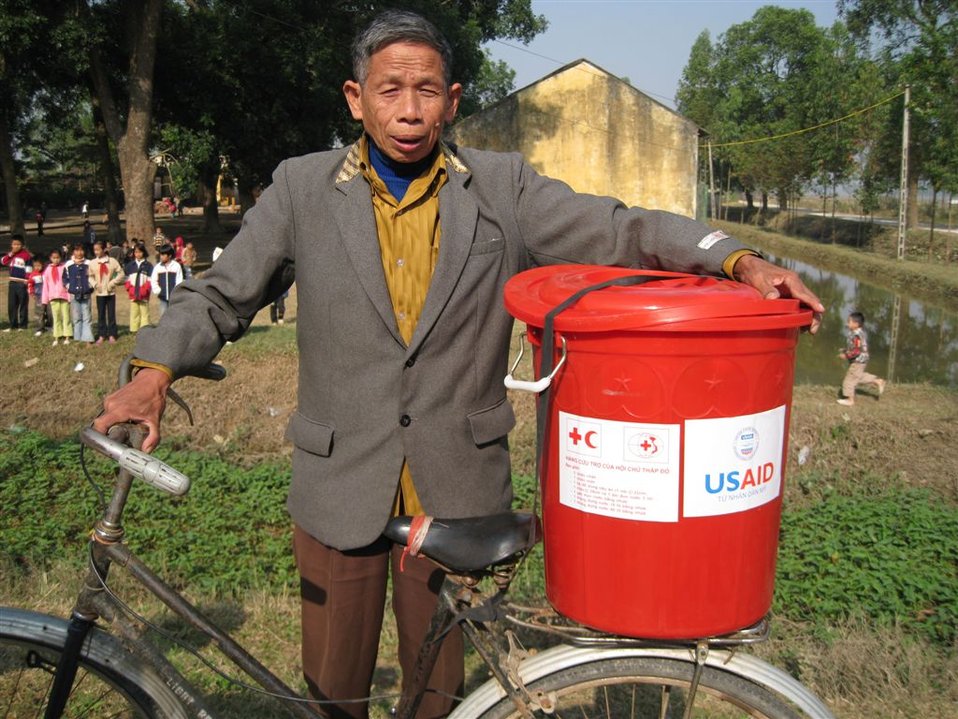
Nguyen Van Luong, of Lien Chau District, receives assistance funded by USAID